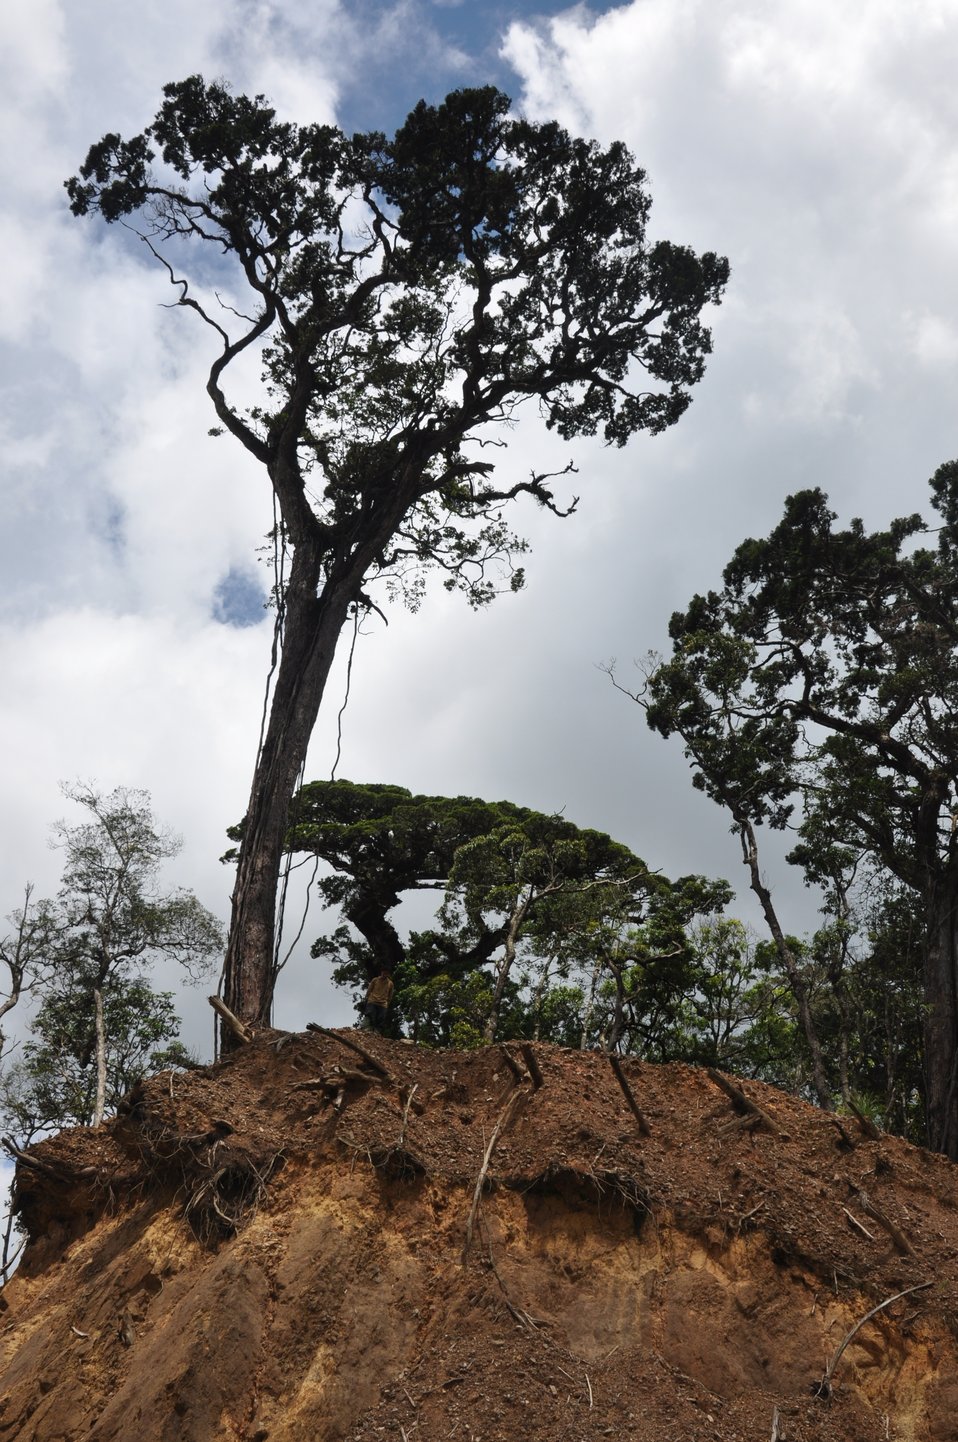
Forests in Vietnam